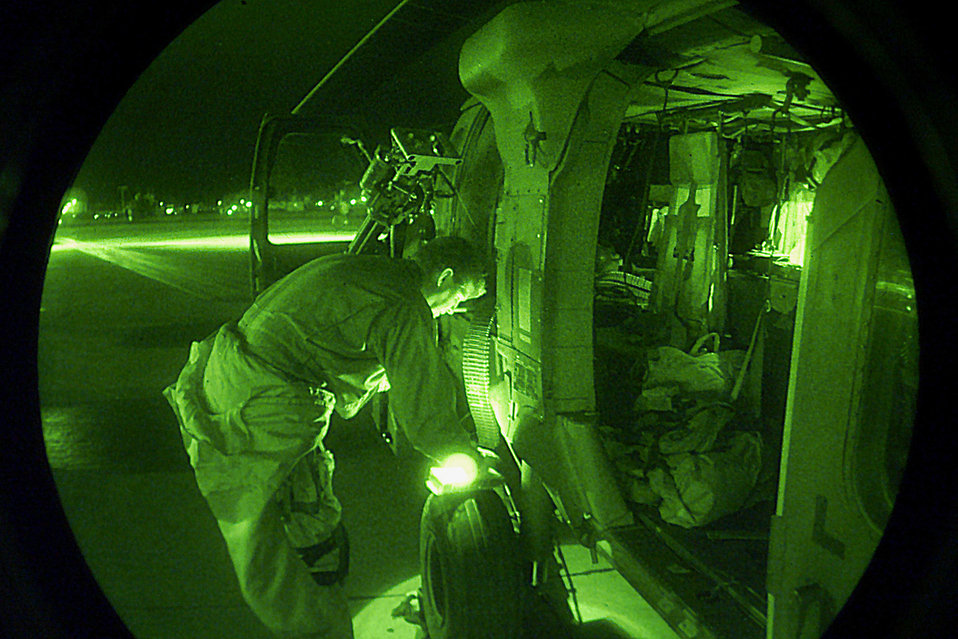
Night check

FALLON NAVAL AIR STATION, Nev. -- Staff Sgt. Duane A. Hebert, of Lafayette, Ind., confirms checklist operations of a GAU-2 minigun, Feb. 11, 2000. The HH-60G Pave Hawk helicopter and crew are assigned to the 41st Rescue Recovery Squadron, Moody Air Force Base, Ga. This training flight will familiarize the crew with the Fallon ranges for the upcoming Desert Rescue exercise. The Pave Hawk's primary wartime mission is combat search and rescue, infiltration, exfiltration and resupply of special operations forces in day, night or marginal weather conditions.